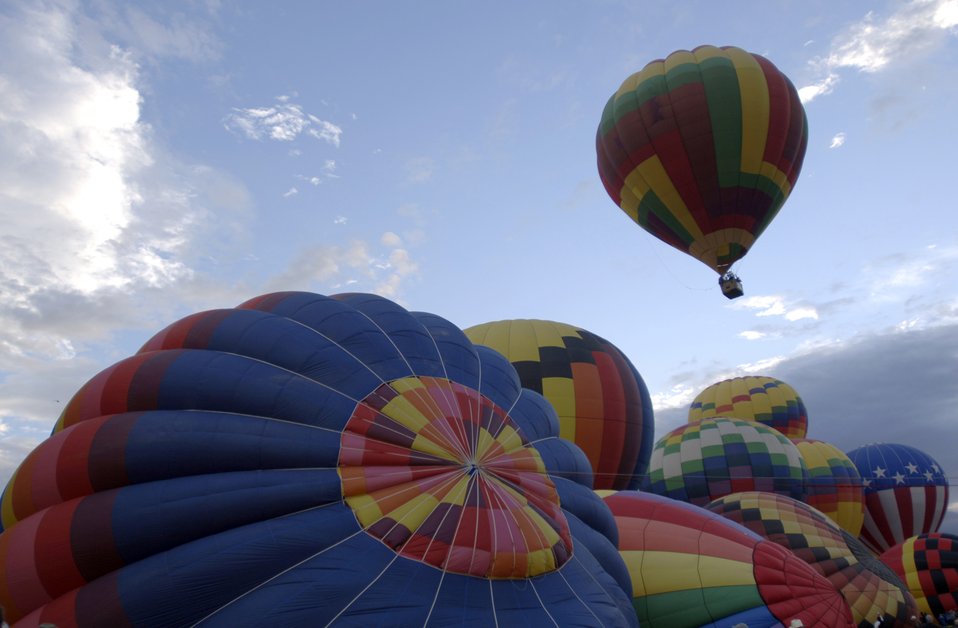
Balloon Fiesta takes off

Over 700 hot air balloons took off for the first mass ascension over Fiesta Park during the Balloon Fiesta at Albuqerque, New Mexico, Oct. 7, 2006. Balloon Fiesta is a world-renowned New Mexico attraction where several hot air balloons have been flying for thirty five years.